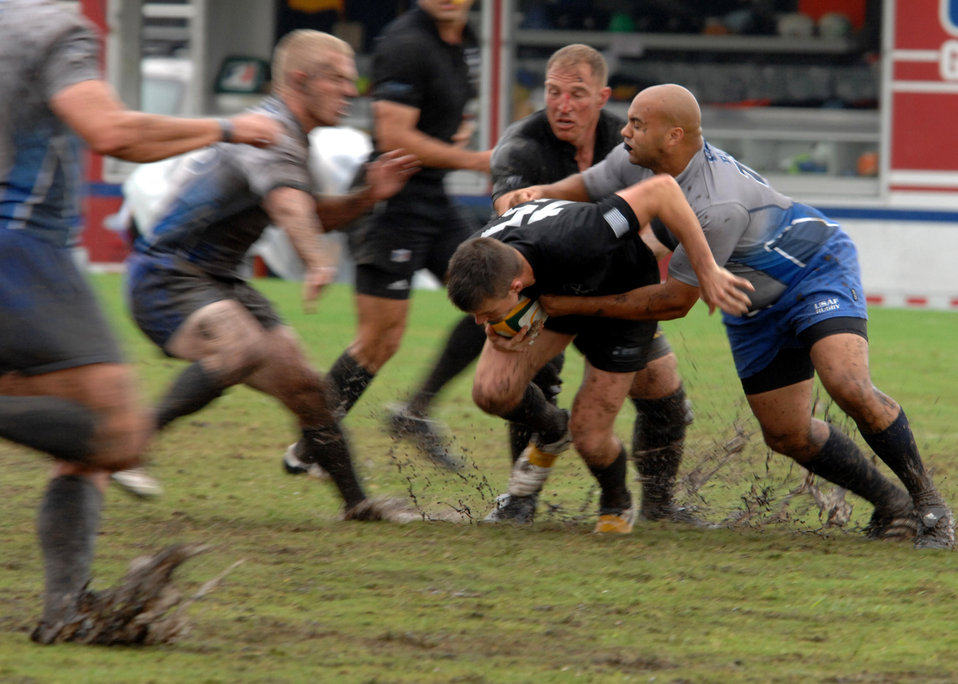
Air Force triumphs over Army

Air Force rugby player Michael Hancock tackles an Army player during the 2007 Armed Forces Rugby Tournament, Oct. 27 at Marine Corps Base Camp Lejeune, N.C. Air Force defeated the Army 22-5 for a fourth consecutive championship victory.